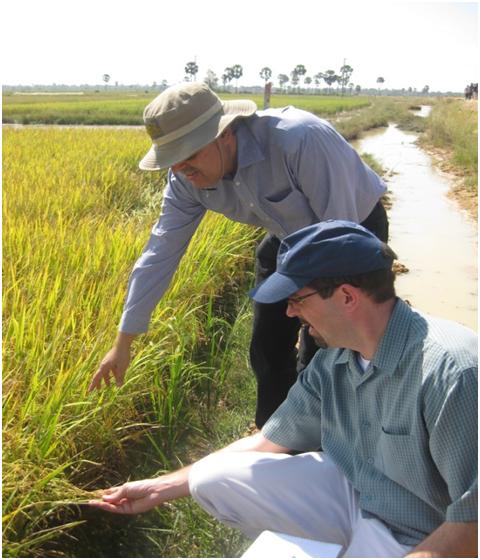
Chris Hegadorn and Ajay Markandray Inspect a Rice Paddy

Chris Hegadorn, Alternate Permanent Representative of the U.S. Mission to the UN Agencies in Rome, and Ajay Markandray, FAO/Cambodia Mission Director, inspect fully mature rice paddy grown in a FAO-supported project involving new rice seed varieties, outreach services and other assistance to local, small-holder farmers in Cambodia on January 24, 2011.